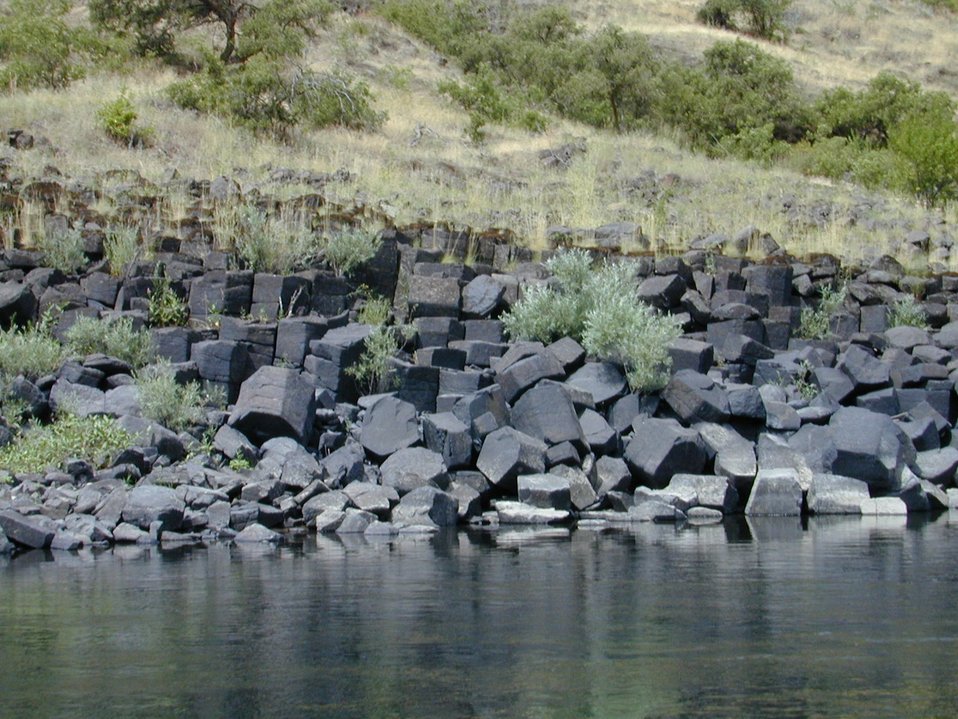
Hexagonal Basalt along the Lower Salmon River Cottonwood Field Office UCSC Upper Columbia Salmon Clearwater District